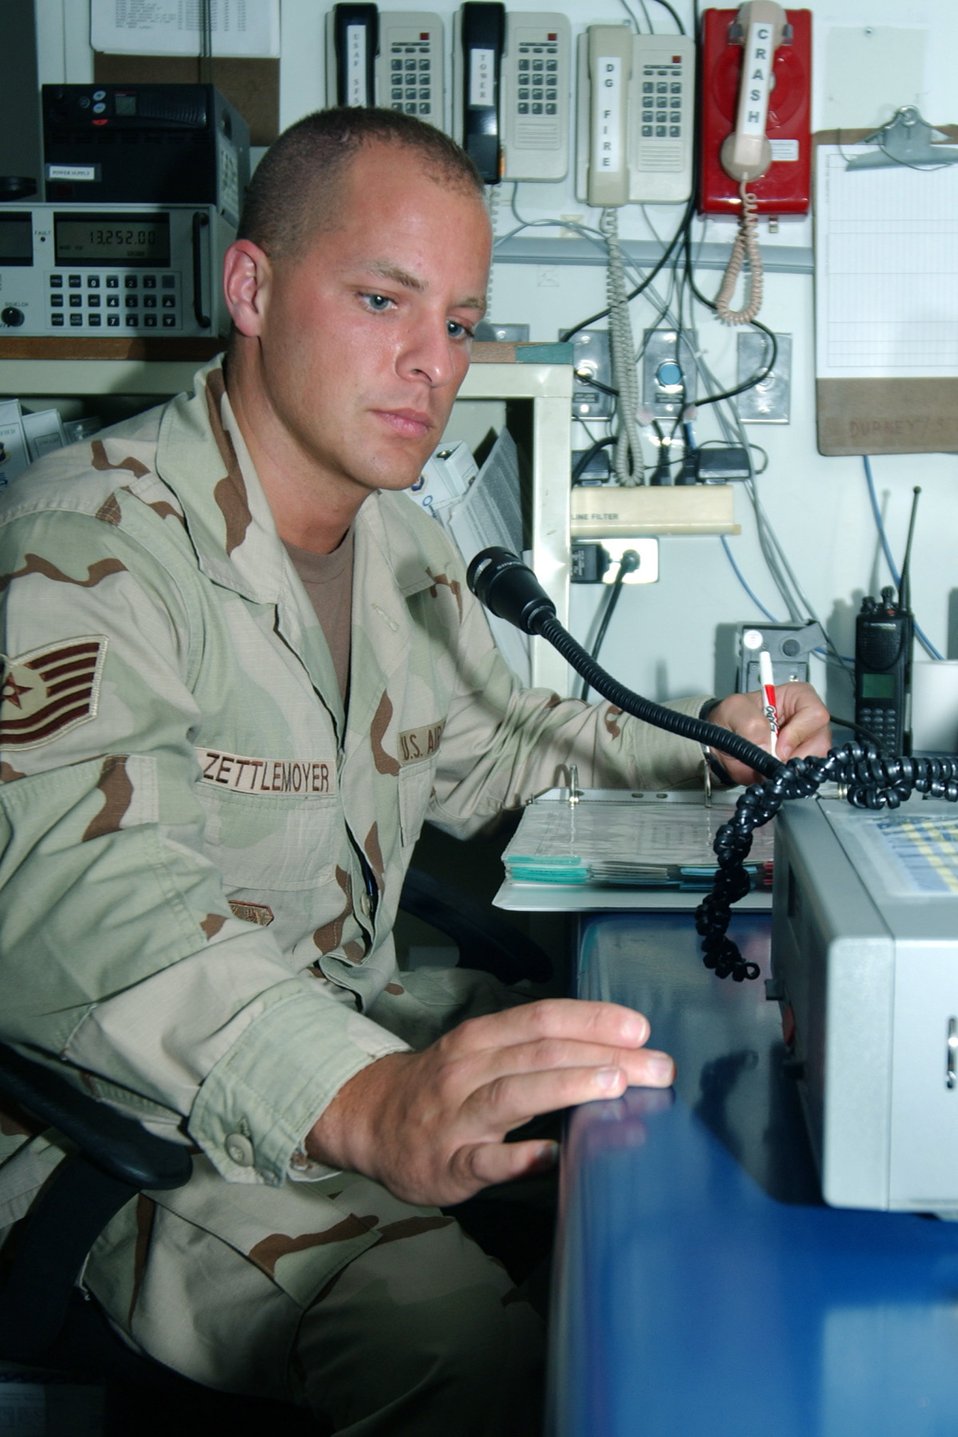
command post

SOUTHWEST ASIA -- Tech. Sgt. Jason Zettlemoyer monitors information being relayed over a radio. Sergeant Zettlemoyer is a command post controller at a forward-deployed location. Controllers are on duty around the clock to ensure key information is relayed to the appropriate agencies.